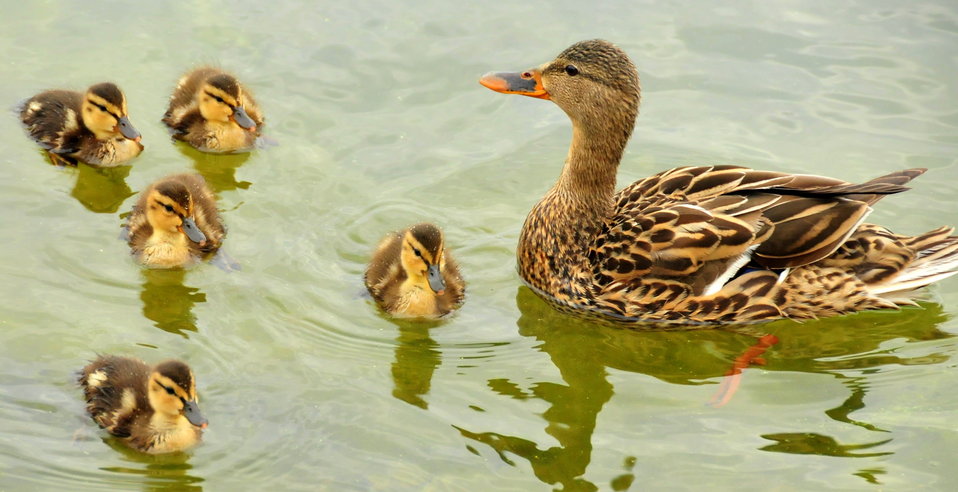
Mallard Hen and Her Brood 5